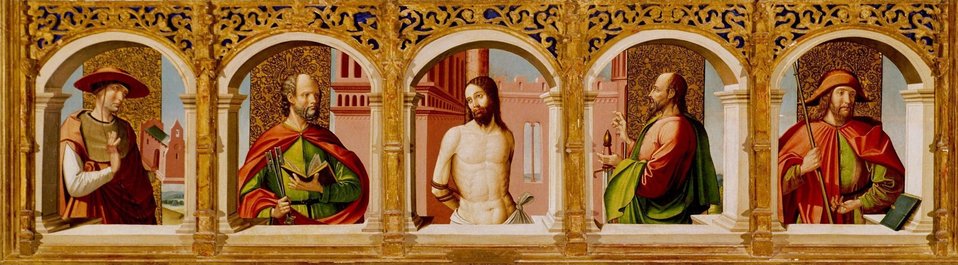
'Christ at the Column with Four Saints', School of Castile painting (possibly Juan de Borgoña), c. 1500-1510, El Paso Museum of Art